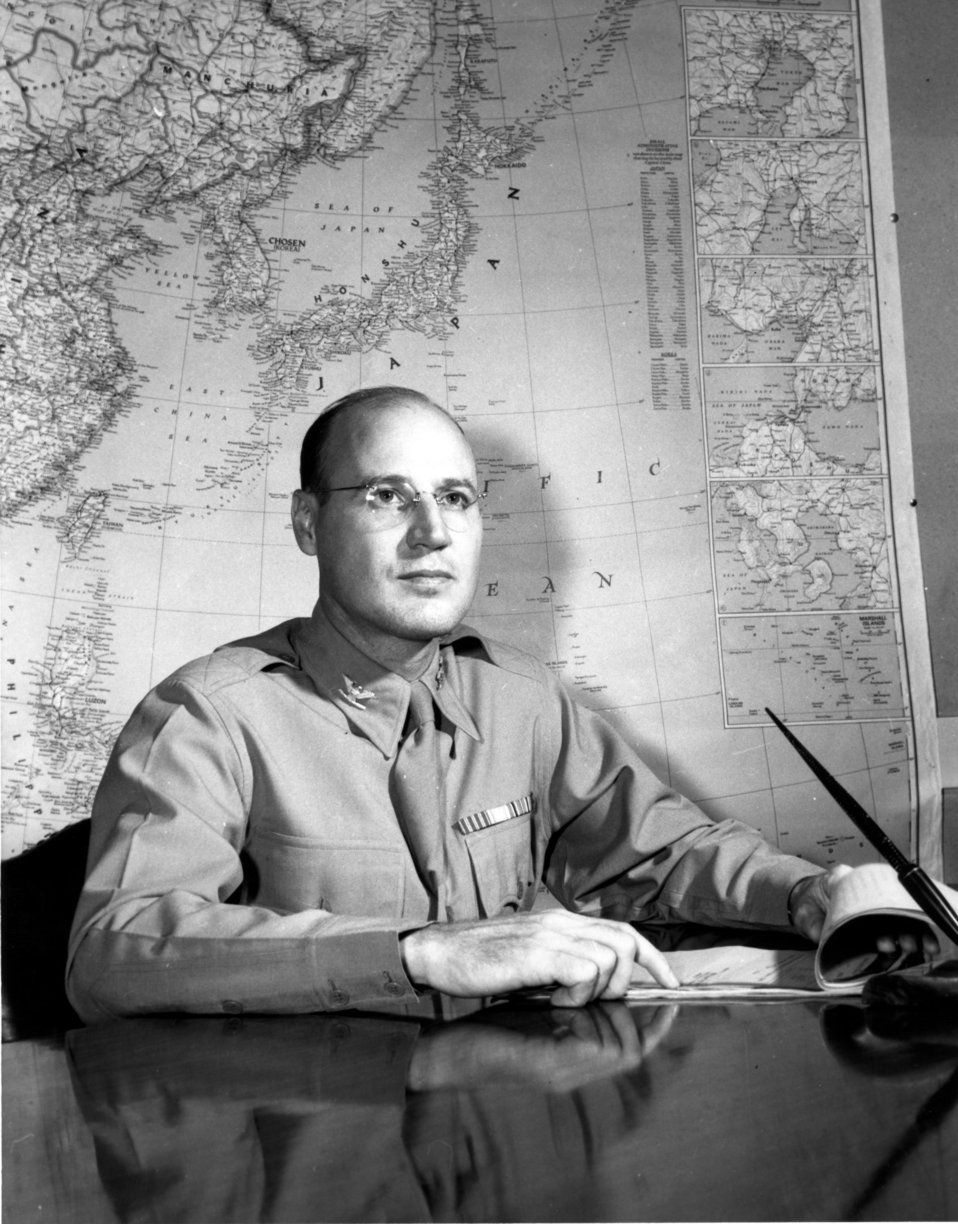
Notable persons at Oak Ridge